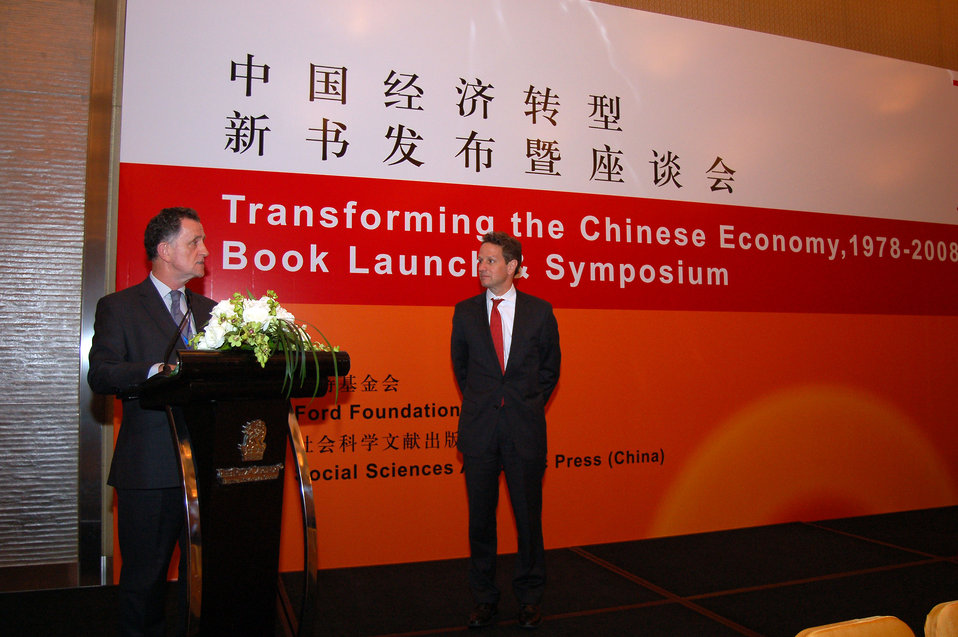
China trip: May 31-July 2 2009

Secretary Geithner being introduced at a reception hosted by the Ford Foundation – an organization for which the Secretary’s father helped establish a presence in China.